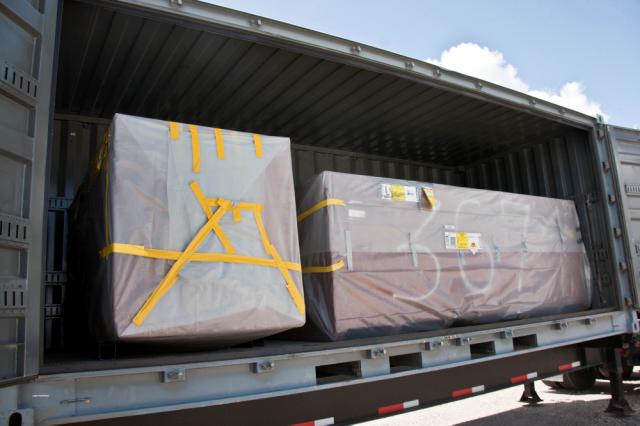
New Facility Aids in Lab’s Capability to Ship TRU Waste to WIPP

The High-Energy Real Time Radiography (HE-RTR) facility allows the LANL TRU Waste Program (LTP) to x-ray waste drums that contain high-density items such as motors and pumps and larger containers known as standard waste boxes.

A standard waste box enters the HE-RTR at Los Alamos National Laboratory. The facility x-rays waste drums that contain high-density items such as motors and pumps and larger containers known as standard waste boxes.